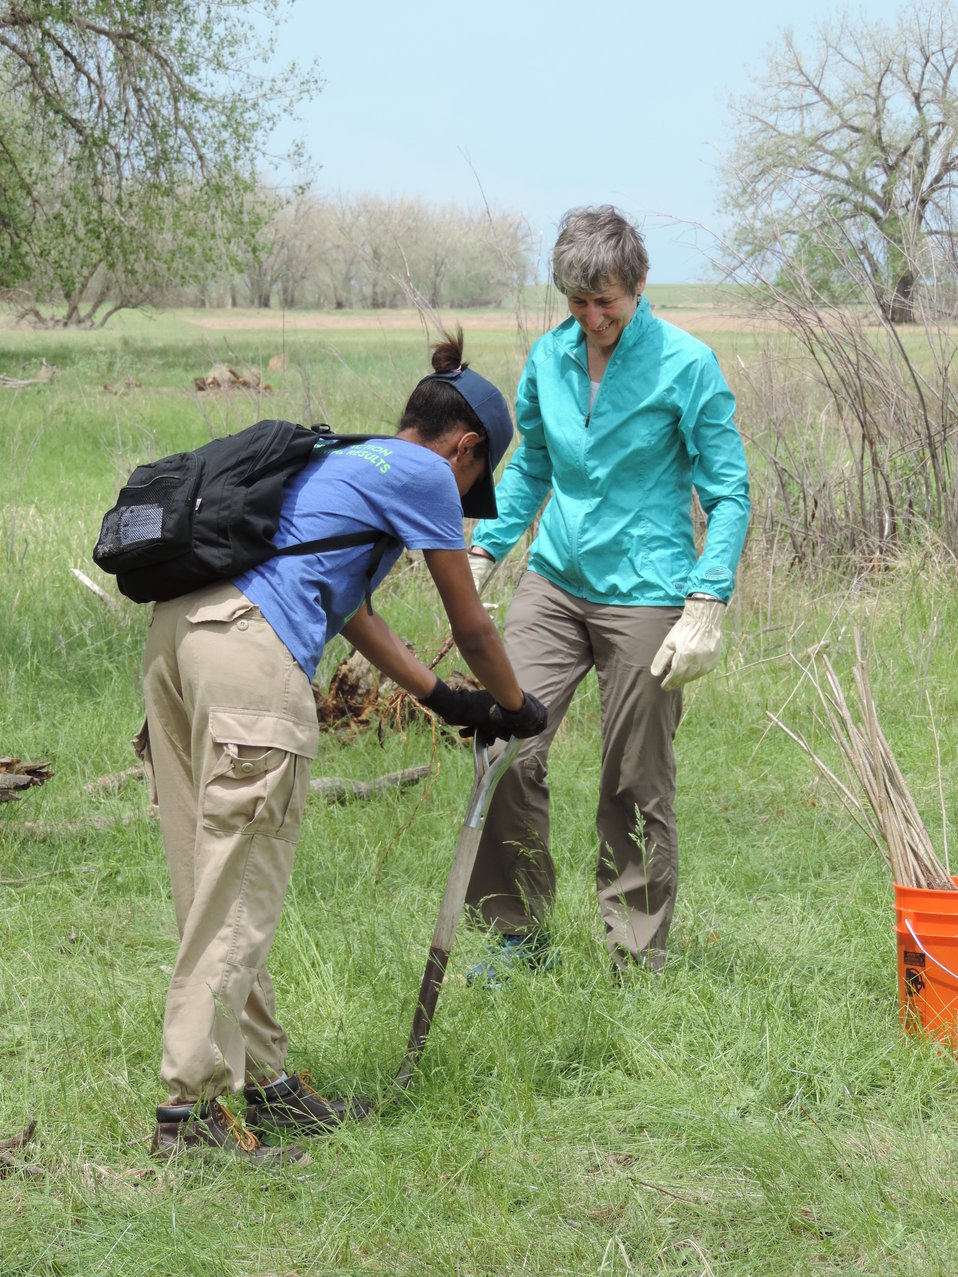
Secretary Jewell Planting a Cottonwood Tree with a Groundwork Denver Member